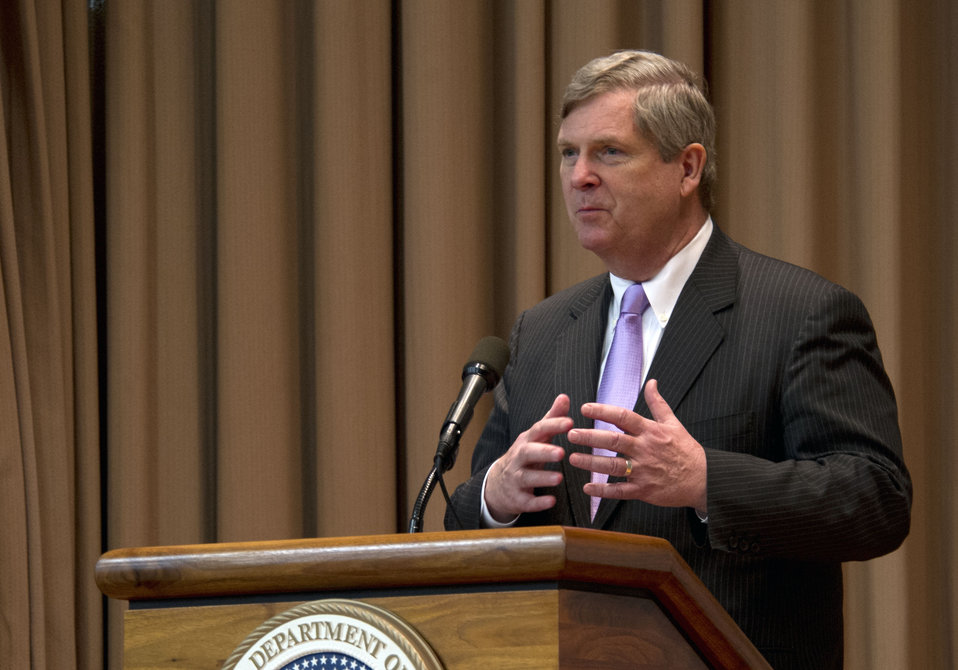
Agricluture Secretary Tom Vilsack speaking at the U.S. Department of Agricuture Black History Month Observance on Feb. 21, 2013, in the Jefferson Auditioirum at the USDA in Washington, DC.